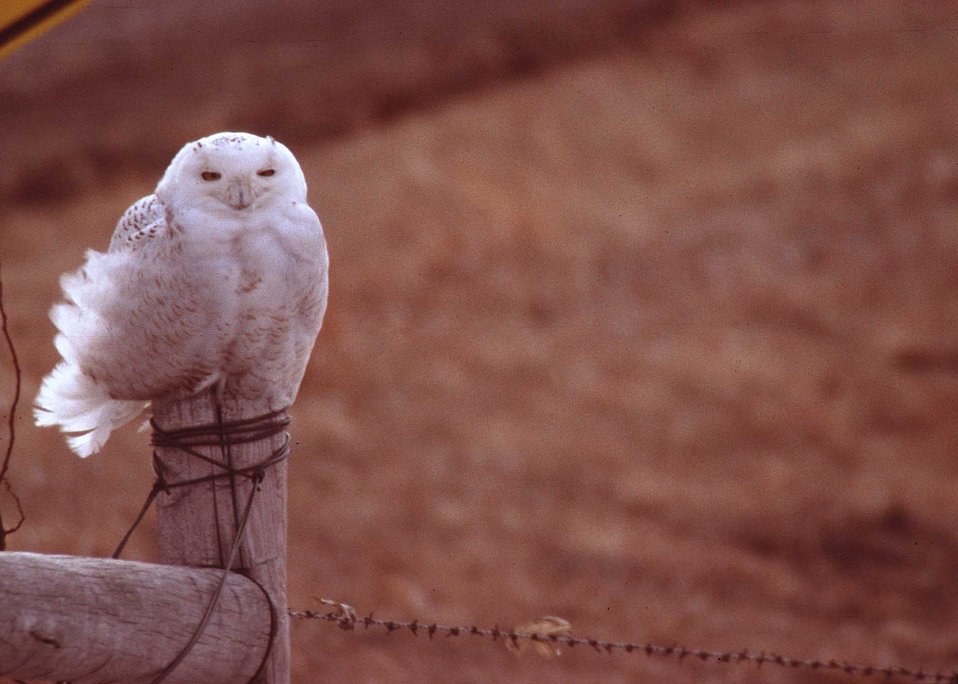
Snowy owl.